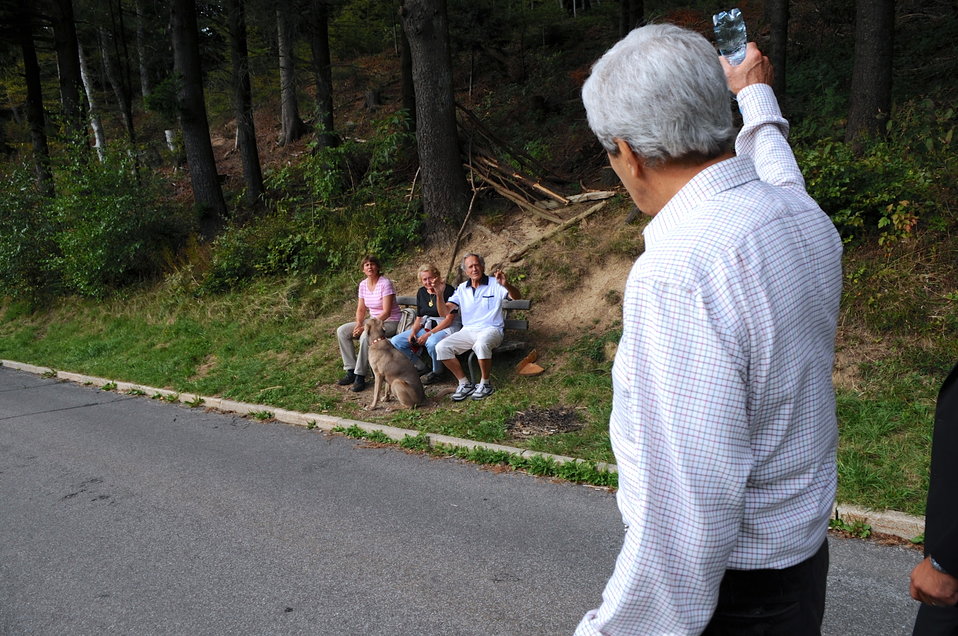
Secretary Kerry Greets Swiss Residents During Mountain Hike

4:49 p.m., September 14, 2013 - U.S. Secretary of State John Kerry greets a group of Swiss residents during a hike in the mountains outside Montreaux after the U.S. and Russian governments reached an agreement to eliminate chemical weapons in Syria.